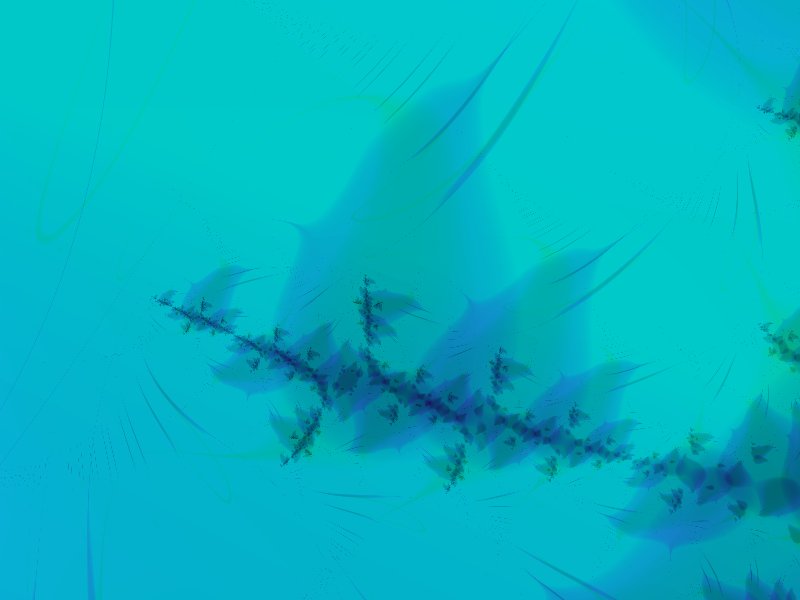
En fraktal generarad med programmet Vchira av Åke Persson. Ingen efterprocessing.